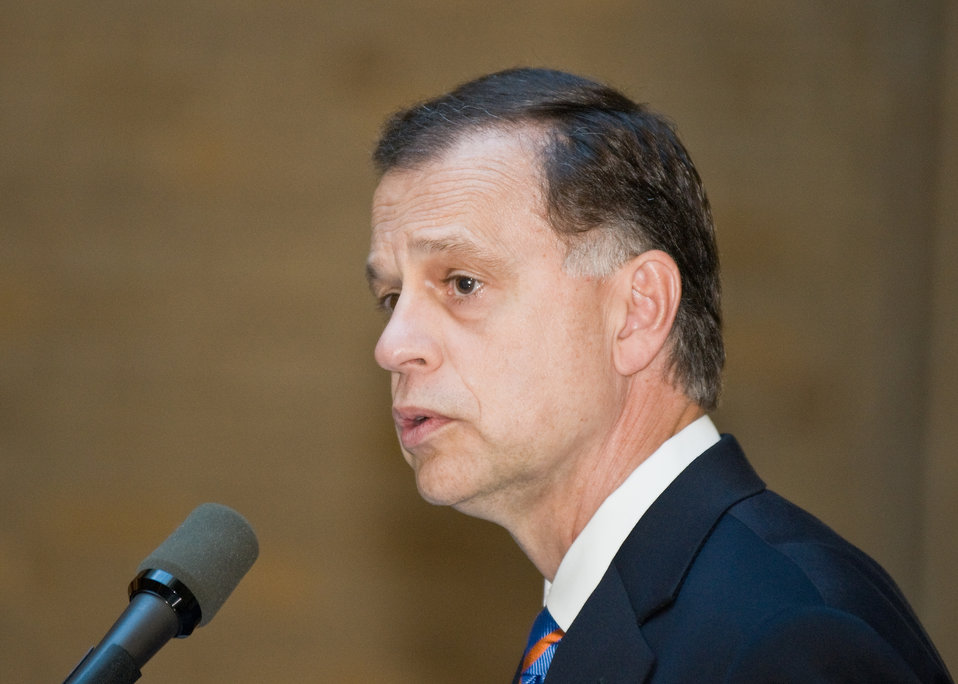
Gary Stooksbury, Chief Executive Officer, South Carolina Power team, Aiken Electric Cooperative discusses access to capital and the success of rural cooperatives and what they have offered to rural economic development during the celebration of October as National Co-op Month at an event at the Department of Agriculture, Tuesday, October 5, 2010 in Washington, DC. USDA Photo 10di1517-38 by Bob Nichols.